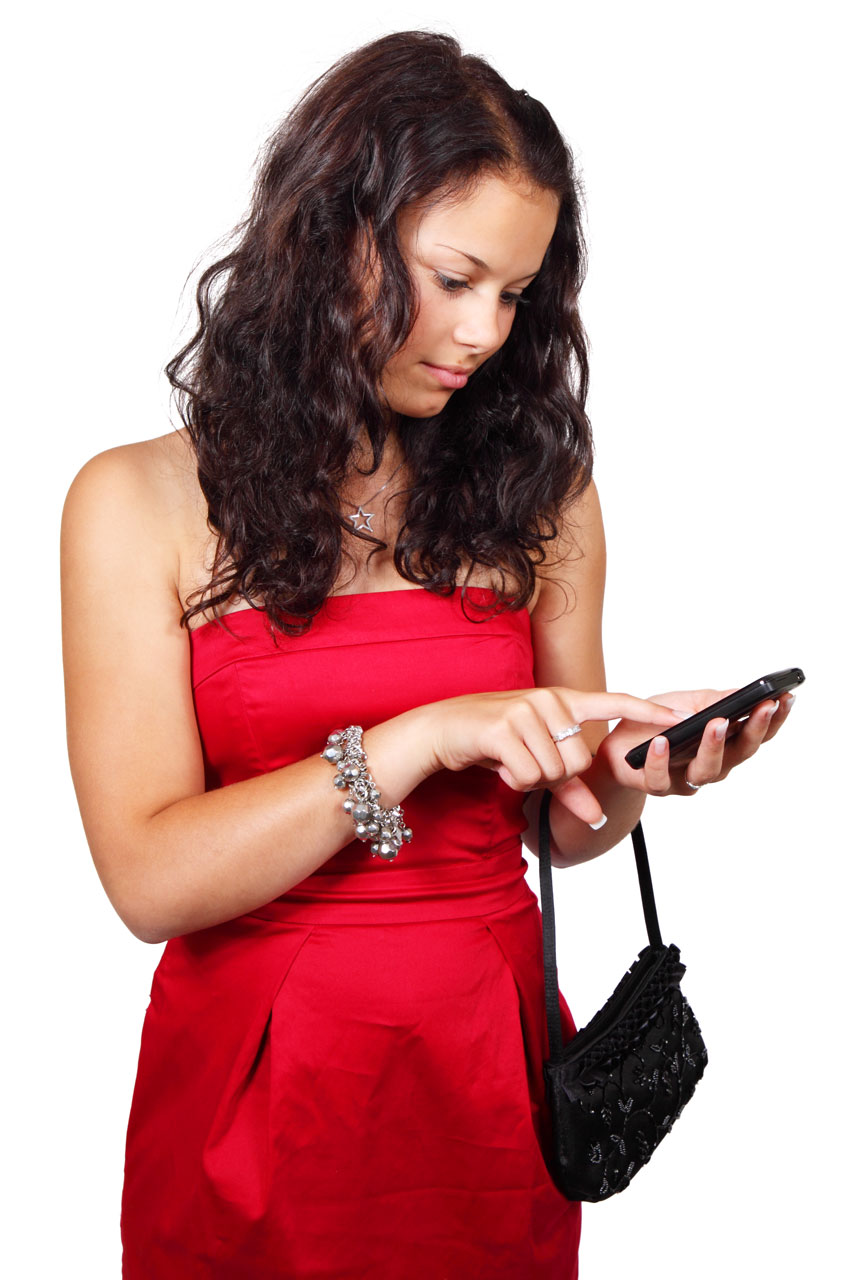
Young woman texting on touch screen phone.